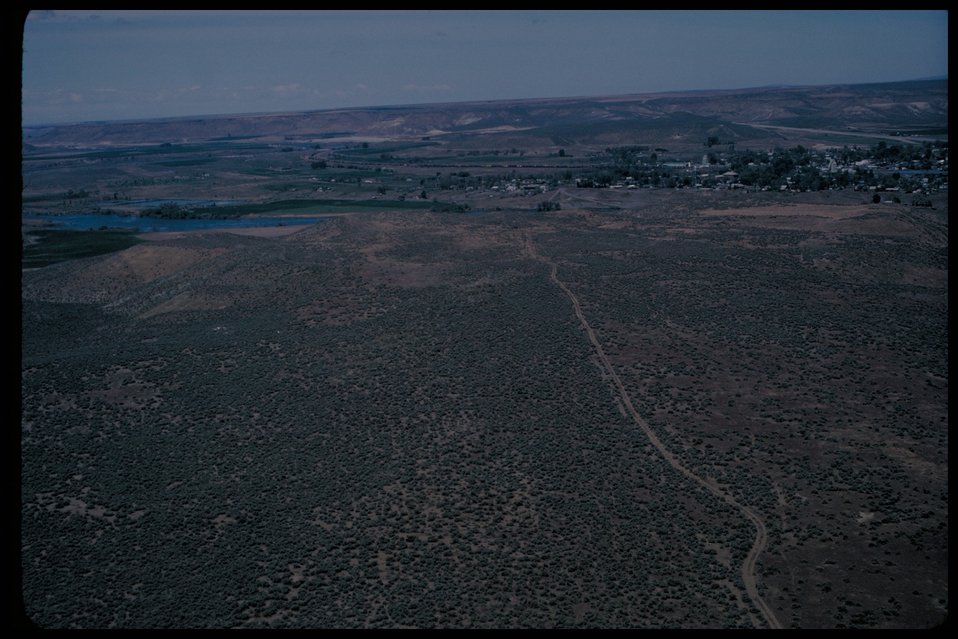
Oregon Trail East of Two Island Crossing Lower Snake River District